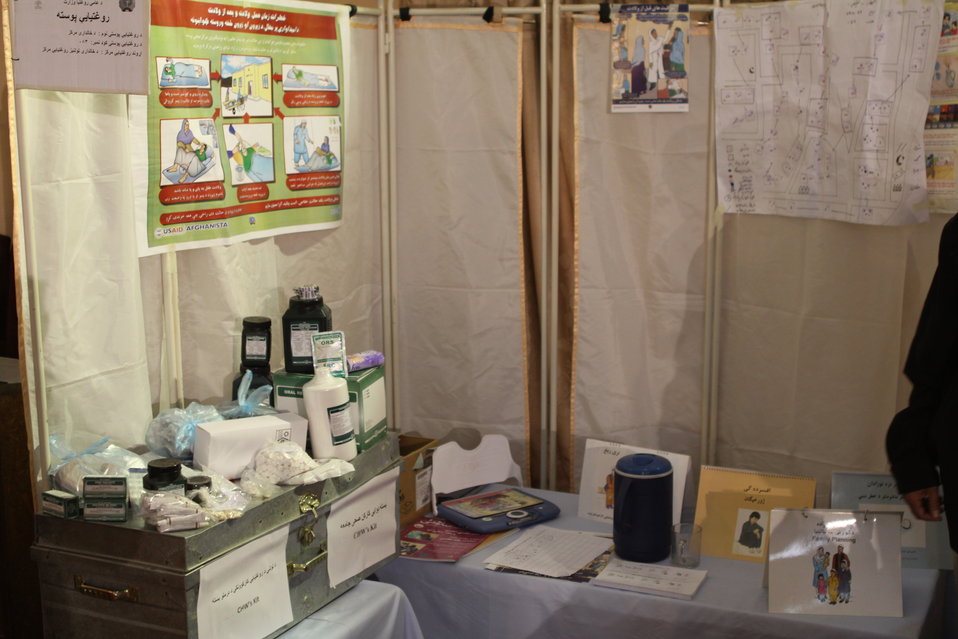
Community Health Workers Celebrated

Kabul, Afghanistan | December 5, 2010 — In support of the United Nations designated International Volunteer Day for Economic and Social Development, Afghanistan’s Ministry of Public Health celebrated its annual Community Health Worker Day today. Acting Minister of Public Health Dr. Suraya Dalil, USAID Senior Deputy Mission Director Robert Hellyer, other government officials, and international donors joined in recognizing the critical contribution of community health workers in Afghanistan and encouraging them to continue their voluntary support to their communities.
The event praised the contributions of the more than 22,000 volunteers throughout the country who deliver community level health-education, counseling, and services out of village health posts located in private homes. The Ministry of Public Health envisioned that community-based healthcare programs will actively encourage communities and families to adopt healthy lifestyles and behaviors, and provide families access to high quality and socially acceptable preventative medicine and life-saving services.
“We have 22,000 community health workers in Afghanistan that are able to implement the basic and standard medicines. They all have been trained through a job description,” said Minister Dalil. Addressing the health workers, she added, “I am proud and feel powerful that I have people like you.”
USAID-funded health projects collaborate closely with the Ministry of Public Health to improve the health and nutritional status of Afghans, provide quality primary healthcare, and promote healthy behaviors at the community and household-levels. USAID supported the training of more than 9,000 of the volunteer community health workers currently working in Afghanistan.
“On behalf of the American people, I congratulate the Community Health Workers for their diligence to gain the skills and knowledge necessary to serve their communities in this important role,” said USAID Senior Deputy Mission Director Hellyer. “USAID strongly supports community based health care and believes that quality community-based health services are essential to reaching Afghanistan’s Millennium Development Goals.”
To support the Basic Package of Health Services, USAID assisted in developing the community health worker training manual, helped train community health worker supervisors and master-trainers, facilitated in-service training, and produced and developed reporting tools, job aids, and education materials.